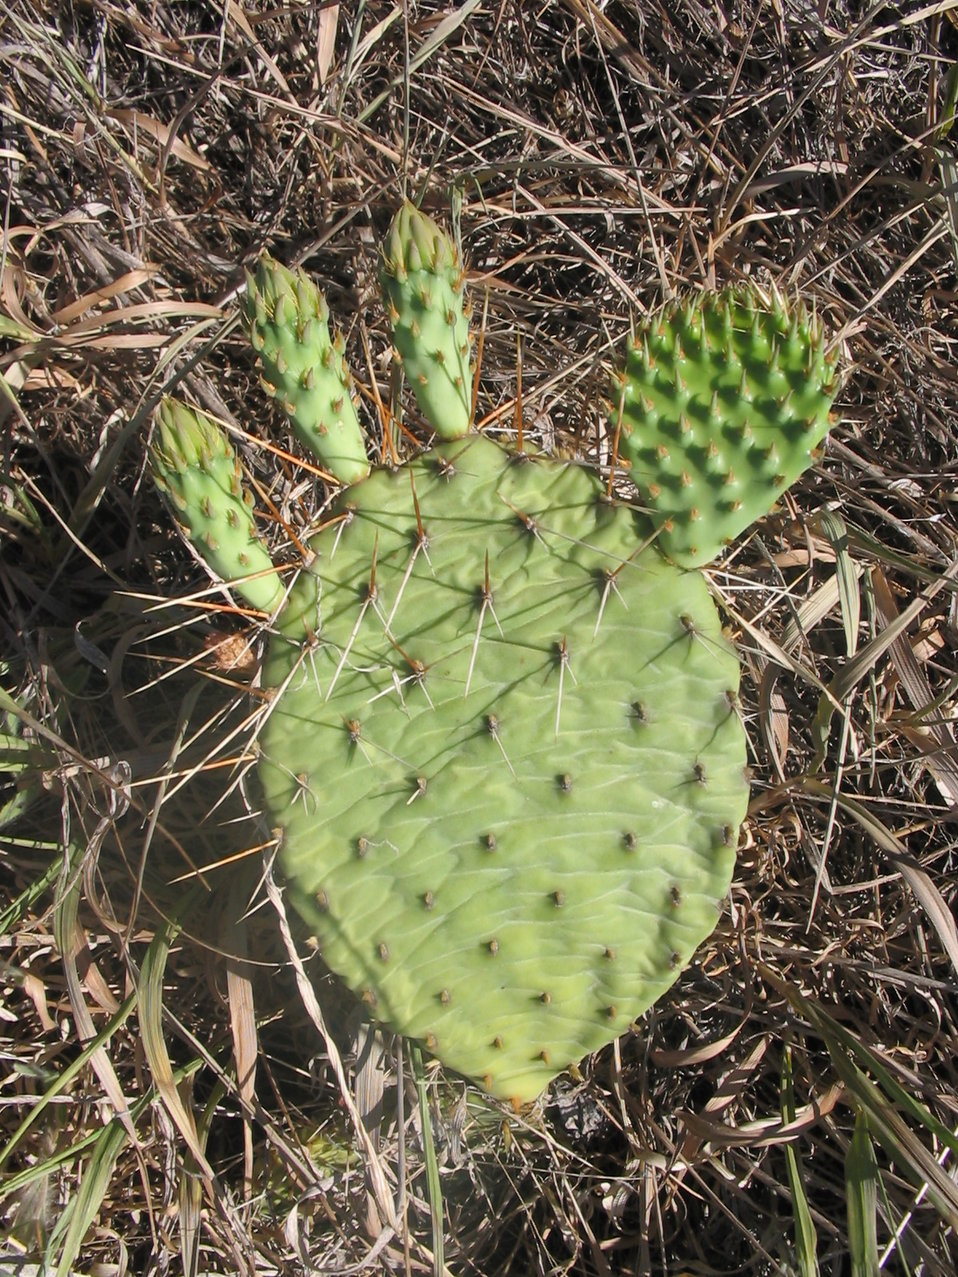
Prairie Cactus